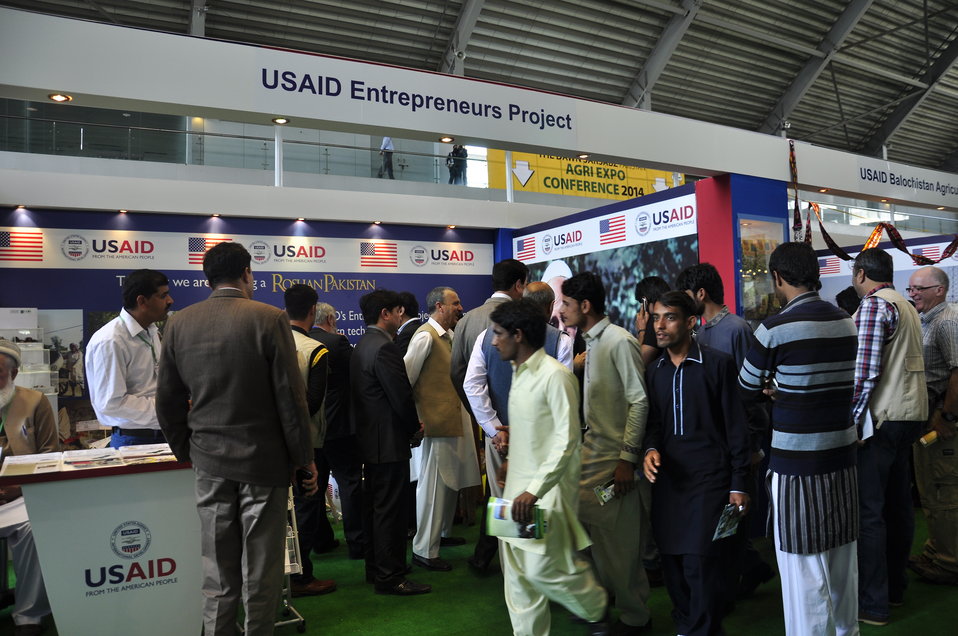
The Stall of USAID's Entrepreneurs Project at Dawn Sarsabz Pakistan Agri Expo.